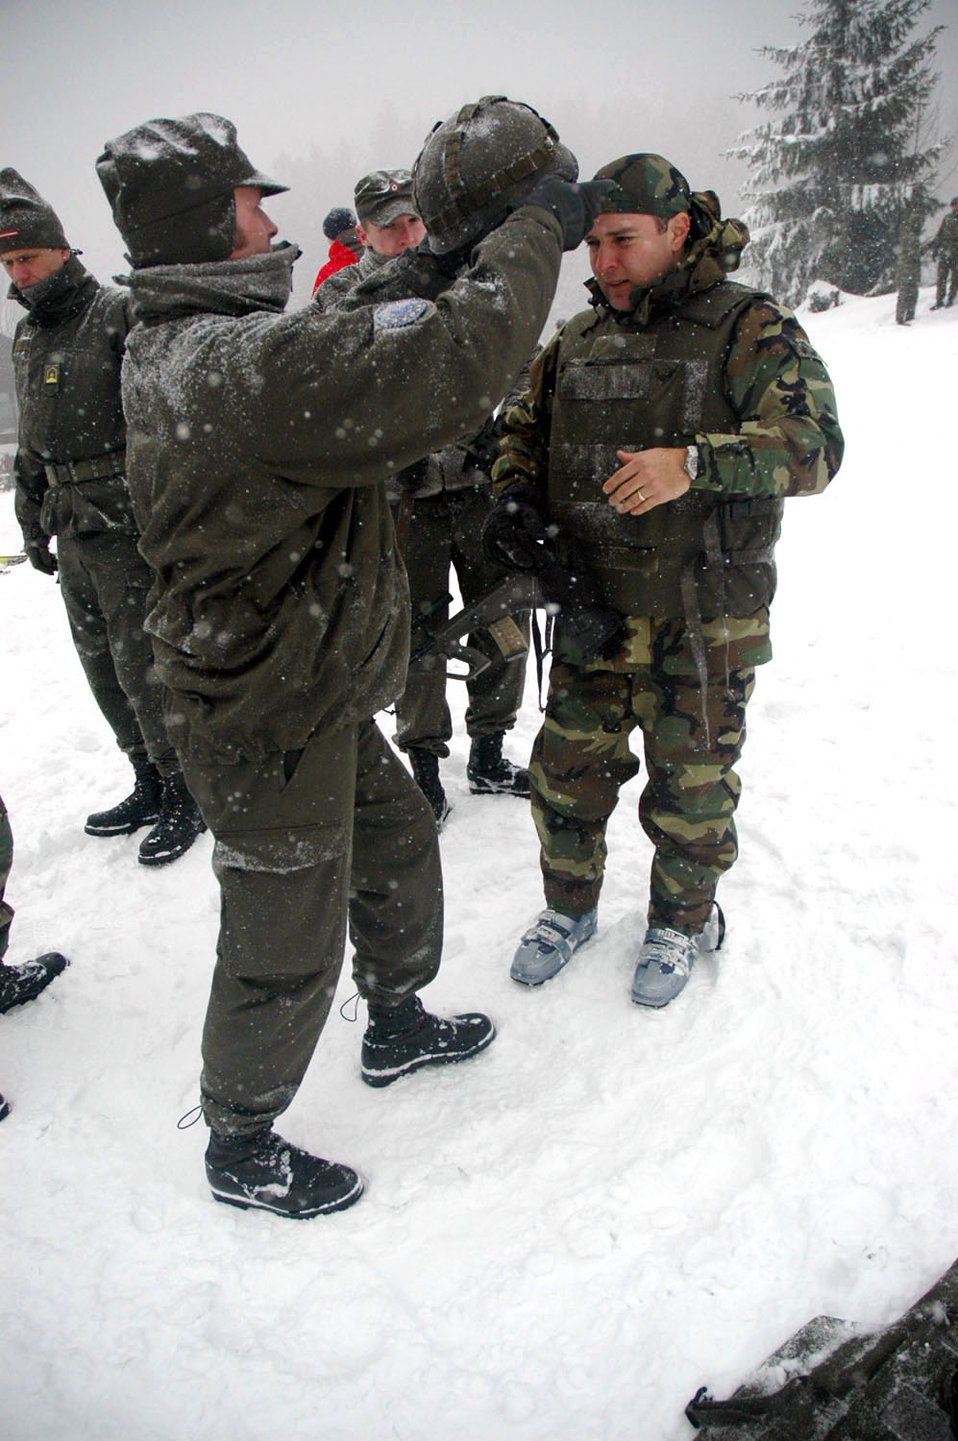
Let the games begin

TUZLA AIR BASE, Bosnia and Herzegovina (AFPN) -- Capt. Mark Arzate prepares for a slalom ride during Operation Winter Games. Captain Arzate was fully equipped with a flak jacket, helmet and rifle for his run. Captain Arzate is chief of airfield operations for Detachment 1, 401st Air Expeditionary Wing.